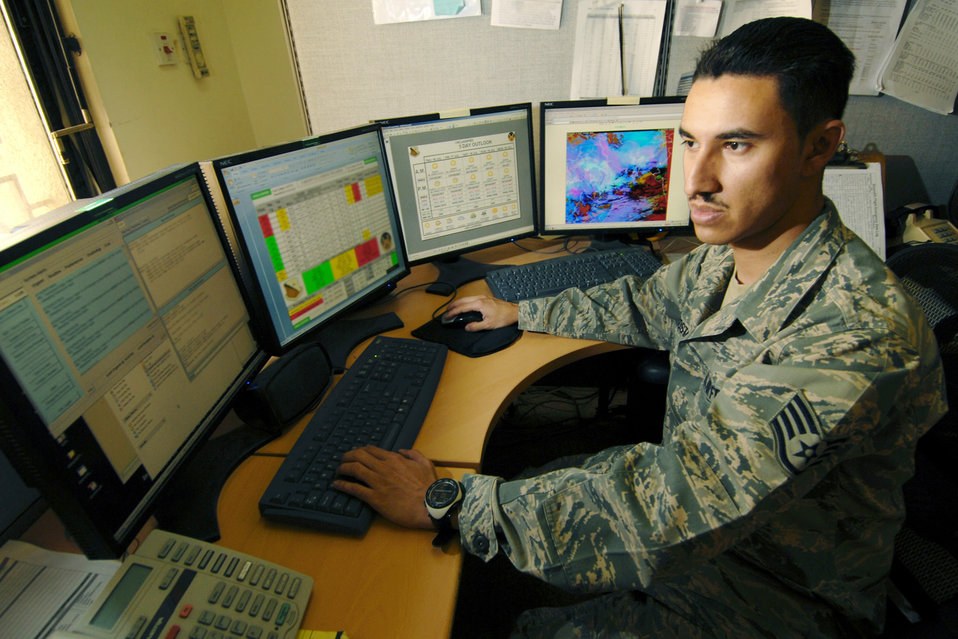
Watching the weather

Staff Sgt. Esteban Acosta, a forecaster in the 379th Expeditionary Operations Support Squadron Weather Flight, observes weather conditions and issues weather advisories, watches, and warnings at an air base in Southwest Asia. The forecasters provide around-the-clock weather service in support of coalition ground and air forces in Southwest Asia. Sergeant Acosta is deployed from Yokota Air Base, Japan.